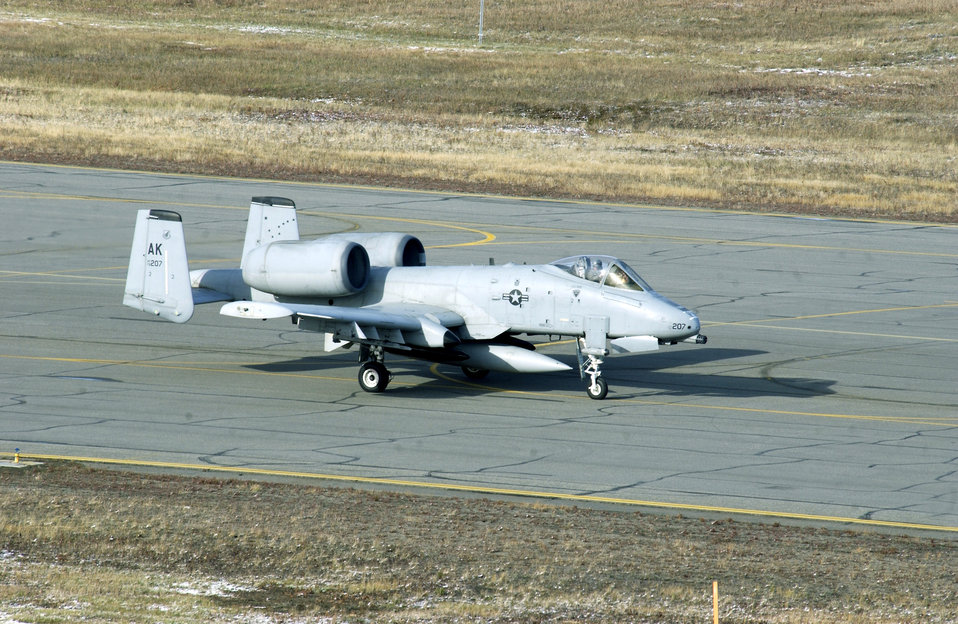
Home at last

EIELSON AIR FORCE BASE, Alaska -- The first O/A-10 Thunderbolt ll from the 355th Fighter Squadron lands here recently for the first time in six months. The A-10's are returning after a six-month deployment to Bagram Air Base, Afghanistan. The 355th Fighter Squadron's primary missions now include air strike control, close air support, target interdiction, joint air attack team, combat escort, and combat search and rescue.